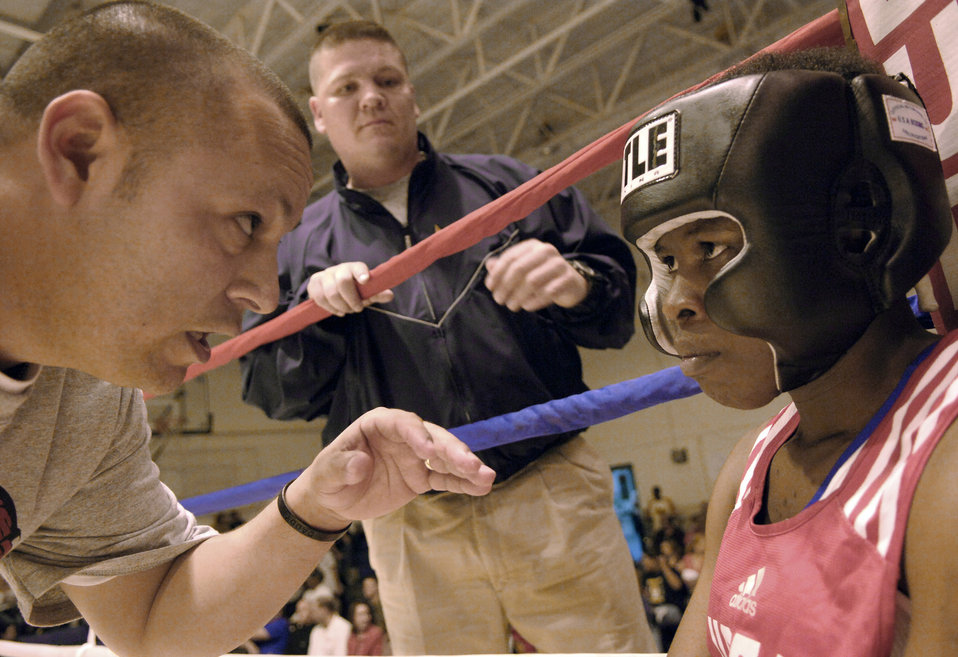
Boxing for the team

SAN ANTONIO (AFPN) -- Assistant Coach Edward Rivas gives instructions to Emma Atolagbe while Frank Vassar listens in Jan. 20. Atolagbe is from Langley Air Force Base, Va., Rivas is from McChord AFB, Wash., and Vassar is from Lackland AFB, Texas. Atolagbe will represent the Air Force at the Armed Forces Boxing Tournament at Fort Huachuca, Ariz., Feb. 6 to 11.